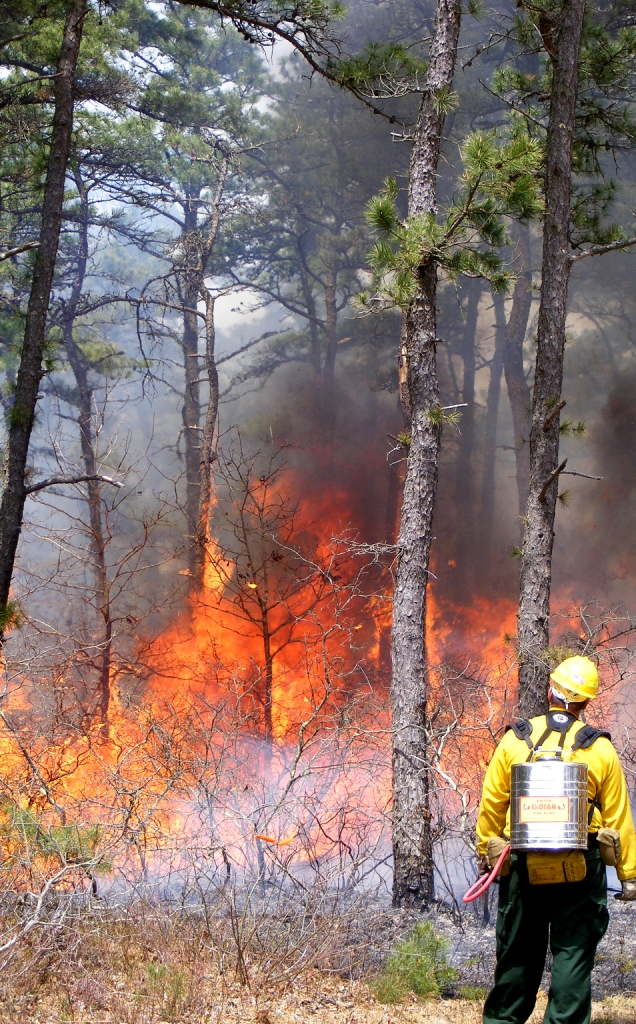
Prescribed fire, April 2010

New England cottontails prefer the shrubby habitat that fire promotes.

Prescribed burning refreshes grasslands and produces more food and cover for species like the cottontail.